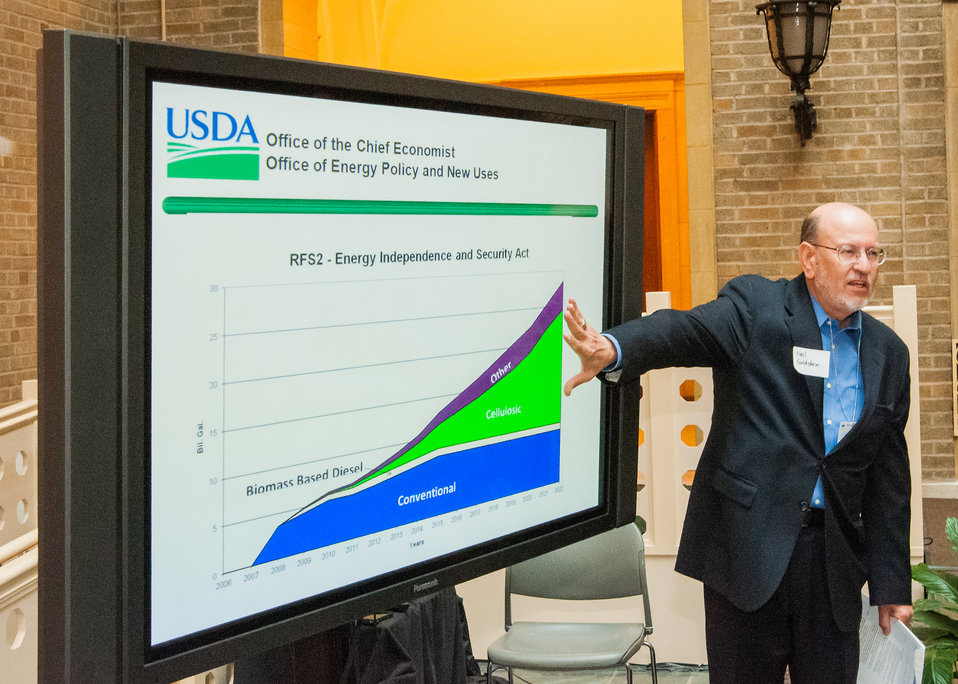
US-Israel Science and Technology Foundation representative Neil Goldstein discusses the Energy Independence and Security Act at the U.S.-Israel Bio-Challenge Symposium at the U.S. Department of Agriculture (USDA) in Washington, D.C. on Thursday, Apr. 18, 2013.